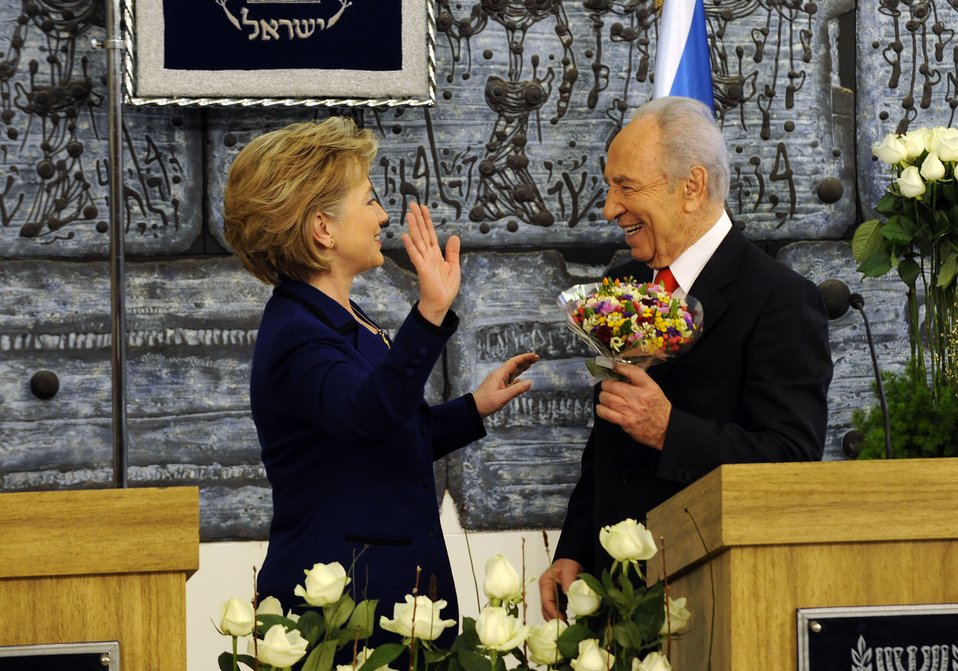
Secretary Clinton With President of Israel

U.S. Secretary of State Hillary Rodham Clinton with the President of Israel, Shimon Peres, at the President's Residence, Jerusalem March 3, 2009.